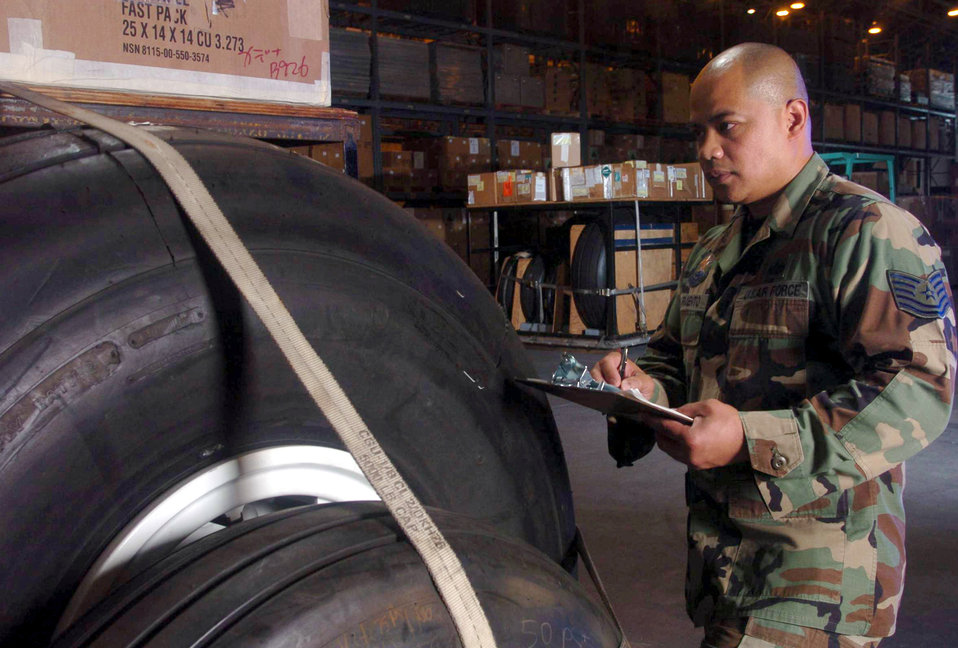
Inventory management

YOKOTA AIR BASE, Japan -- Tech. Sgt. Rex Sarmiento inspect a pallet full of aircraft equipment at the aircraft parts facility here. He is an inventory management technician assigned to the 374th Logistics Readiness Squadron's aircraft parts store element.